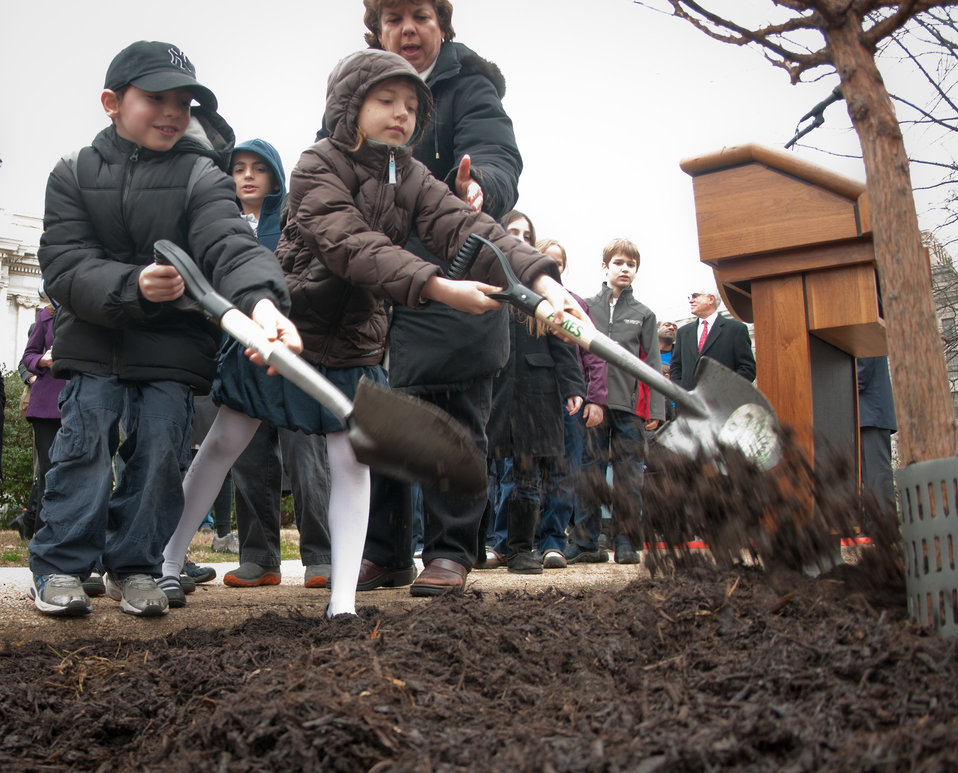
The third grade class of the Jewish Primary Day School of the Nation’s Capital participate in the mulching of the Dawn Redwood used in the Celebration of Tu B’Shevat “The New Year of the Trees” event on the District of Columbia western lawn next to the USDA Headquarters, Whitten Building at 14th Street and Independence Ave SW, in Washington, D.C. on Wednesday, February 8, 2012. For the event they sang “Almond Trees Blossom” and “Tree of Life.”